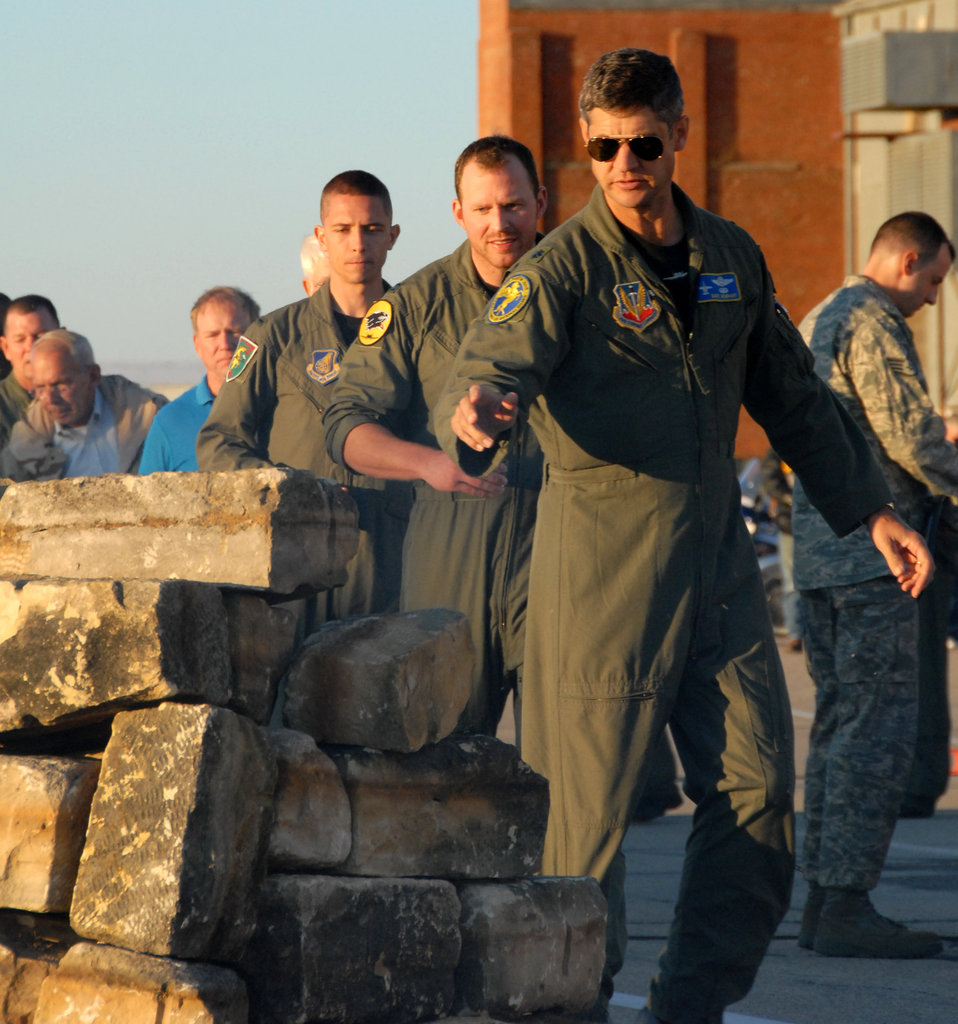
Hawgsmoke 2008

Lt. Col. Daryl Newhart, an A-10 pilot with the Pennsylvania Air National Guard's 103rd Fighter Squadron, throws a shot glass into a fire pit during a